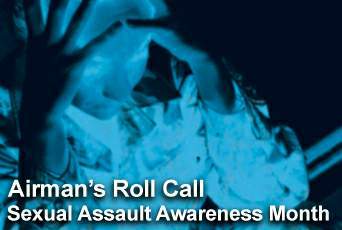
Airman's Roll Call: Sexual Assault Awareness Month

This week's Airman's Roll Call focuses on Web sites, campaigns and other events, observing Sexual Assault Awareness Month.